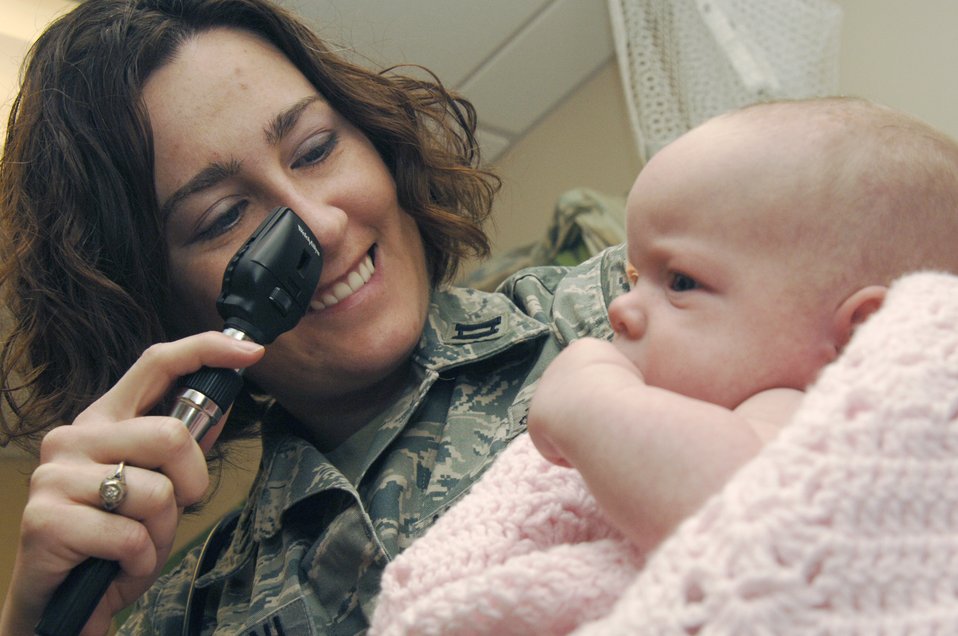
A precious moment

Capt. Leslie Tourangeau examines a patient Dec. 28, 2010, in the clinic at Scott Air Force Base, Ill. Captain Tourangeau is a pediatrician with the 375th Medical Group.